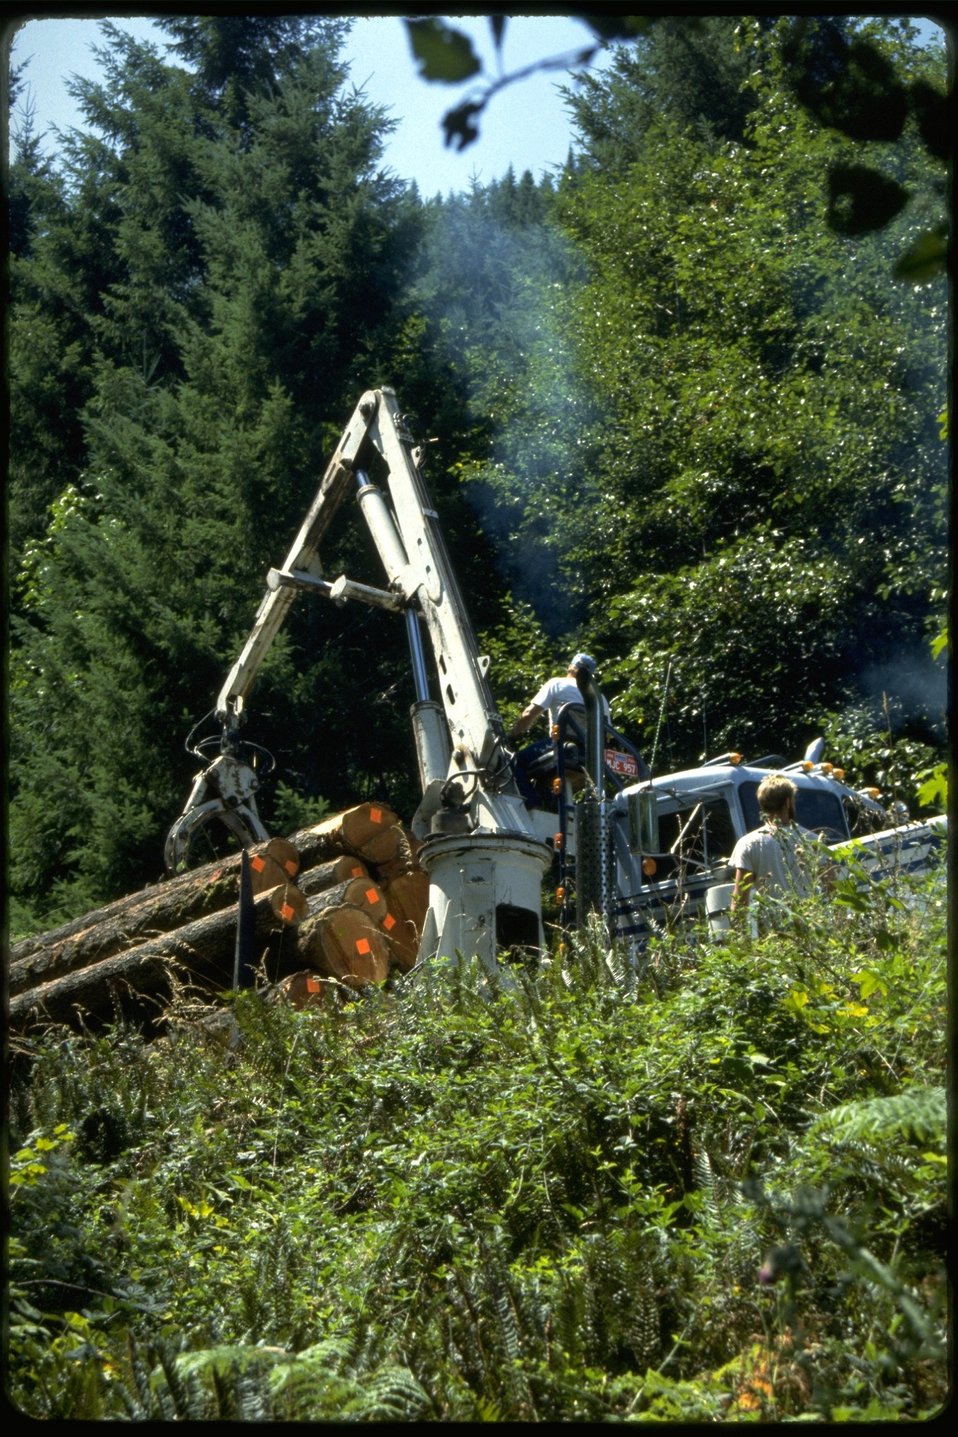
Unloading logs for fishery v-dams.